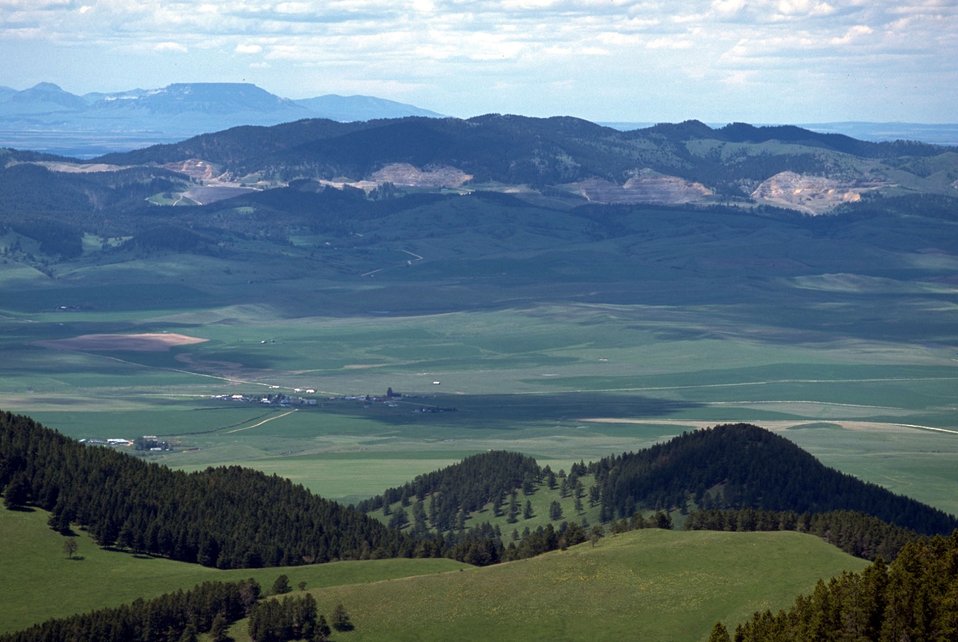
North Moccasin in a valley of the Judith Mountains